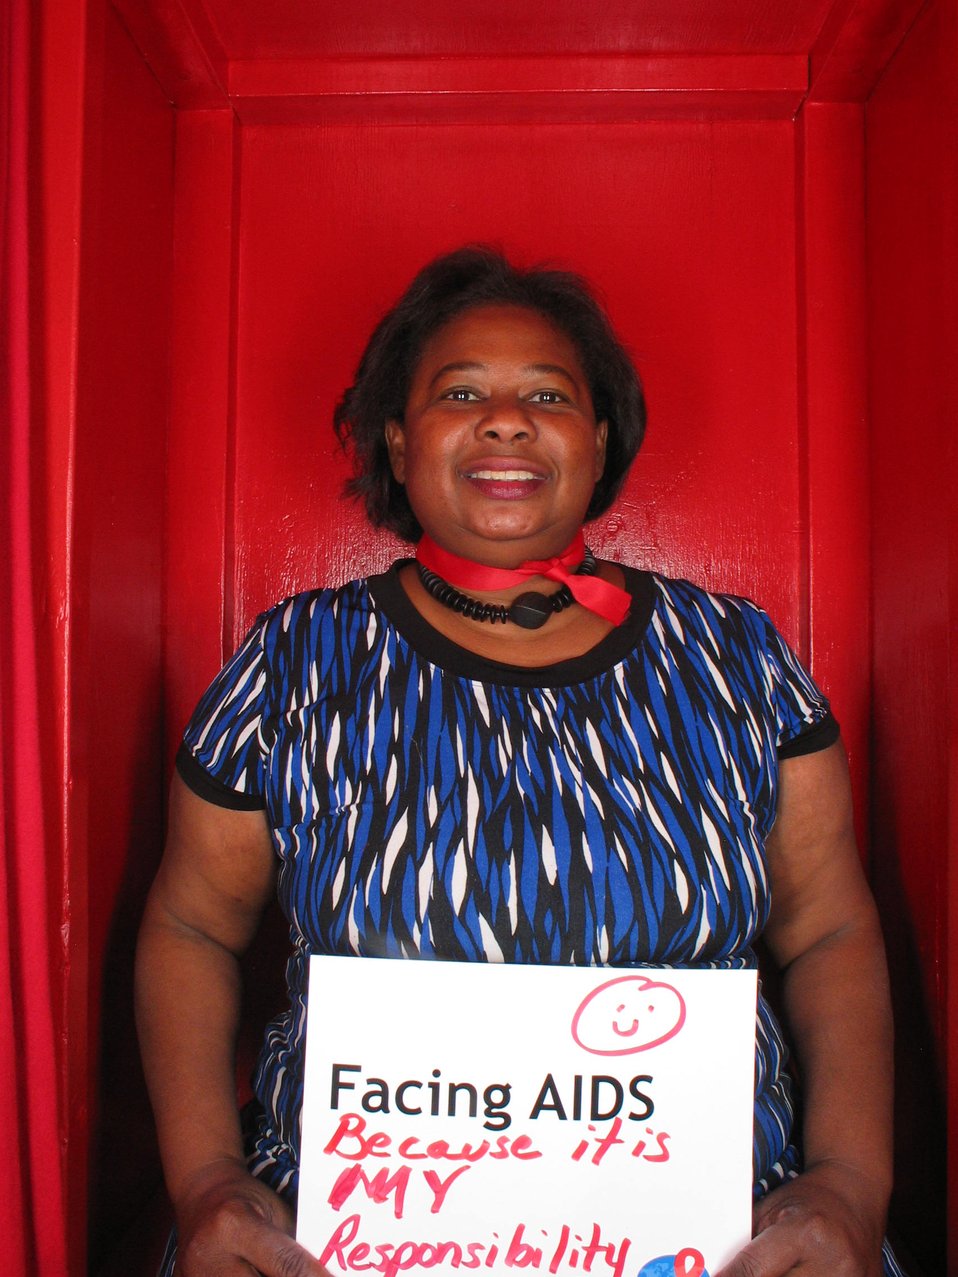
Facing AIDS because its my responsibility